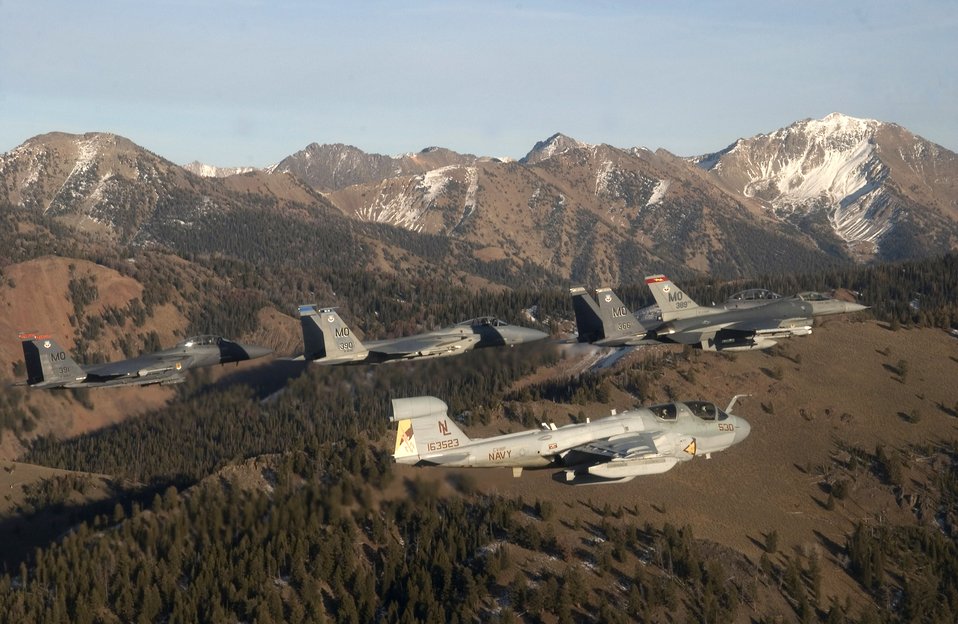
Flying over Idaho

A five-ship formation flies over the Idaho Sawtooth Mountains Nov. 1. Col. Anthony Rock, 366th Fighter Wing commander, led the formation of two F-15E Strike Eagles, and F-15 Eagle, an F-16 Fighting Falcon, all from the 366th FW at Mountain Home Air Force Base, Idaho, and an EA-6B Prowler from the 388th Electronic Control Squadron at Naval Air Station Whidbey Island, Wash. The 366th FW began the first phase of its F-16 drawdown when five jets departed the base Nov. 2. The departure is part of the wing's realignment.